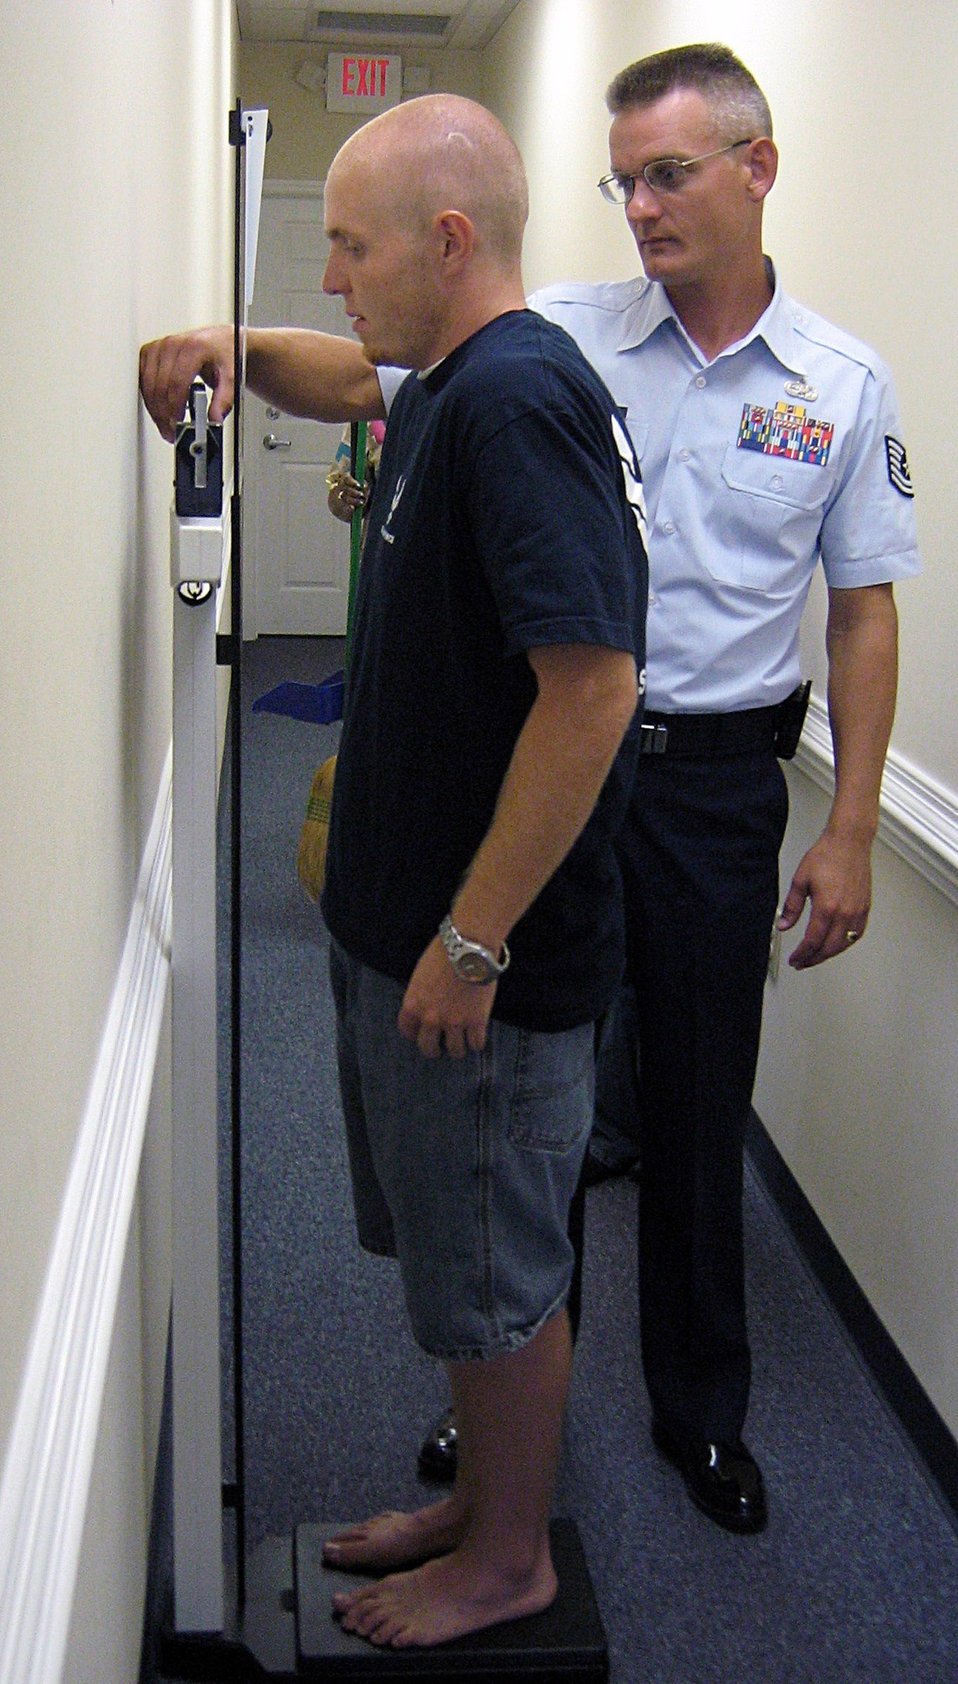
Recruit loses 90 pounds in 8 months to join Air Force

Tech. Sgt. Christopher Conaway weighs Matt Mobley June 23 at the recruiting office in Summerville, S.C. Mr. Mobley weighed 253 pounds when he started the process of joining the Air Force and lost nearly 90 pounds in eight months and currently weighs 164. Mr. Mobley left for Basic Military Training July 1 and Sergeant Conaway was his local recruiter.